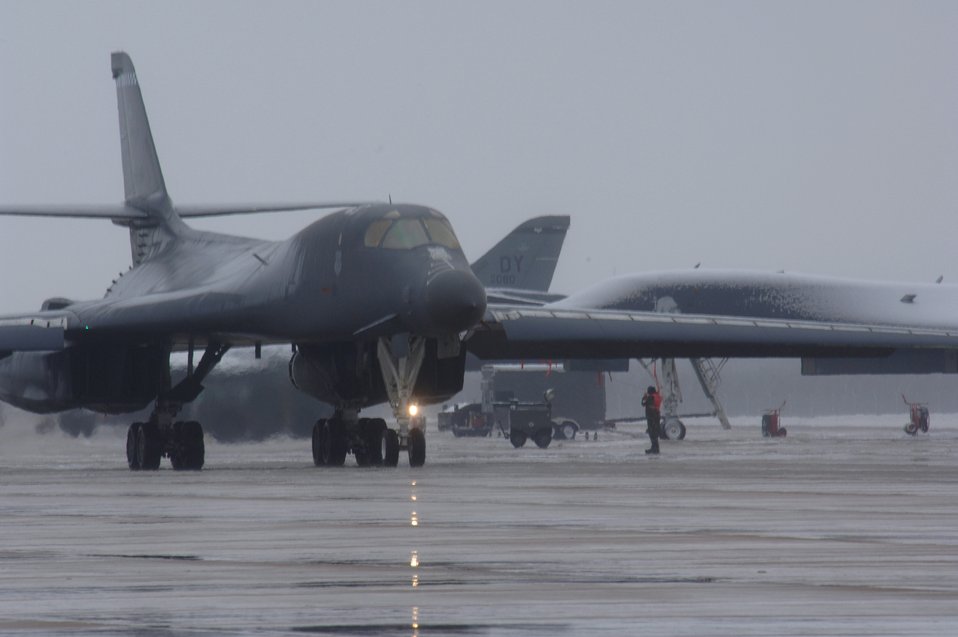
Deep in the frozen heart of Texas

A B-1 Lancer taxis on the flightline at Dyess Air Force Base, Texas, Jan. 17. Operations continue at at the base, despite a dangerous winter freeze that affected much of the state.